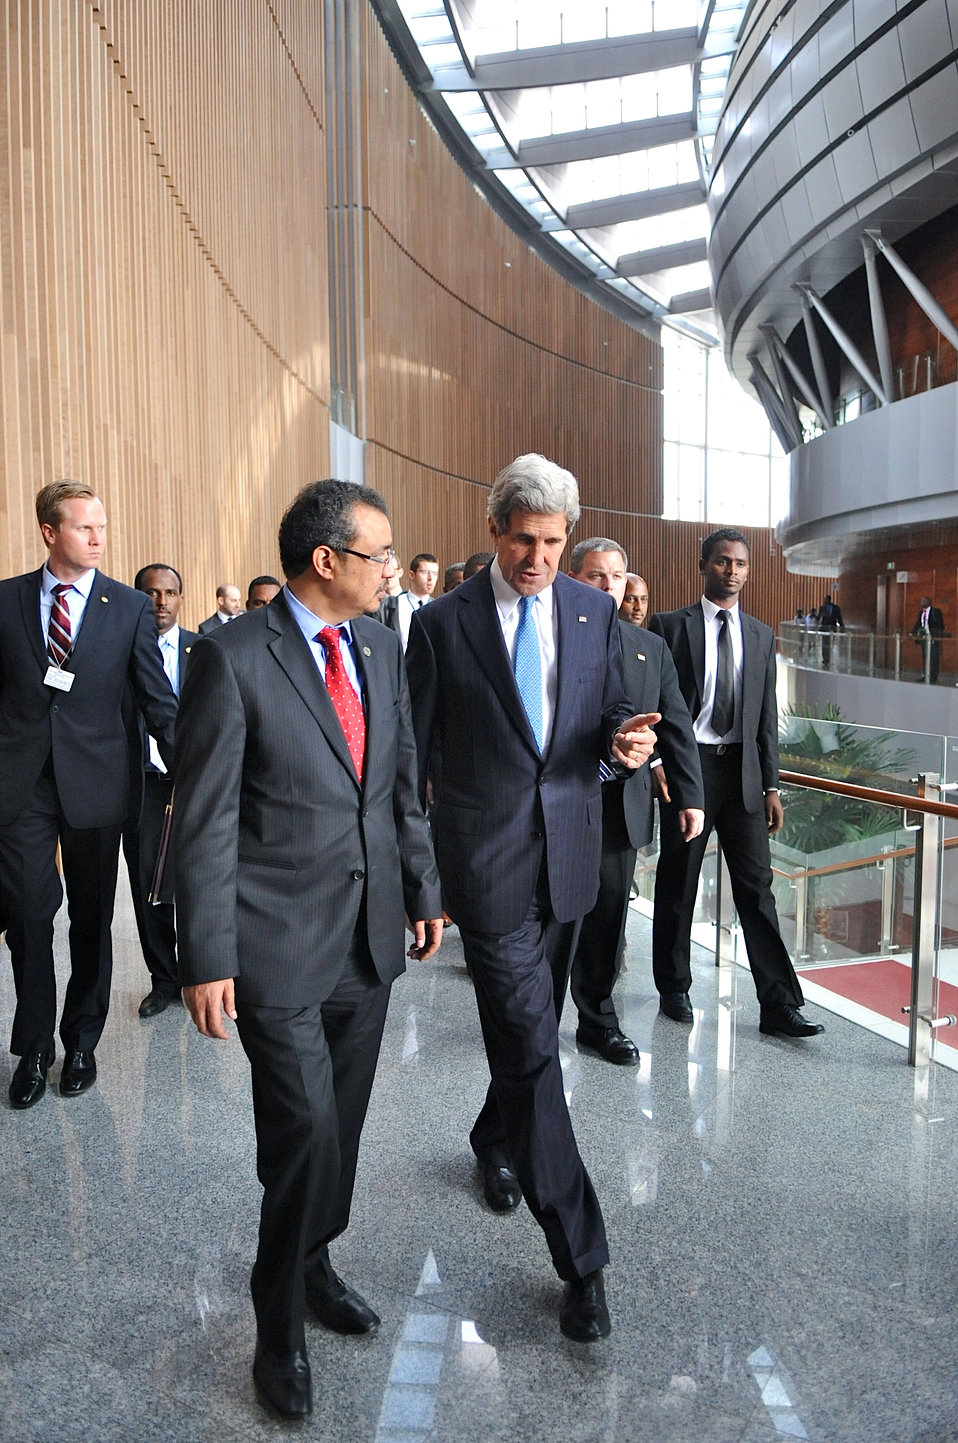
Secretary Kerry With Ethiopian Foreign Minister Adhanom at the African Union Summit

U.S. Secretary of State John Kerry walks with Ethiopian Foreign Minister Tedros Adhanom at the 50th anniversary African Union Summit in Addis Ababa, Ethiopia, on May 25, 2013.